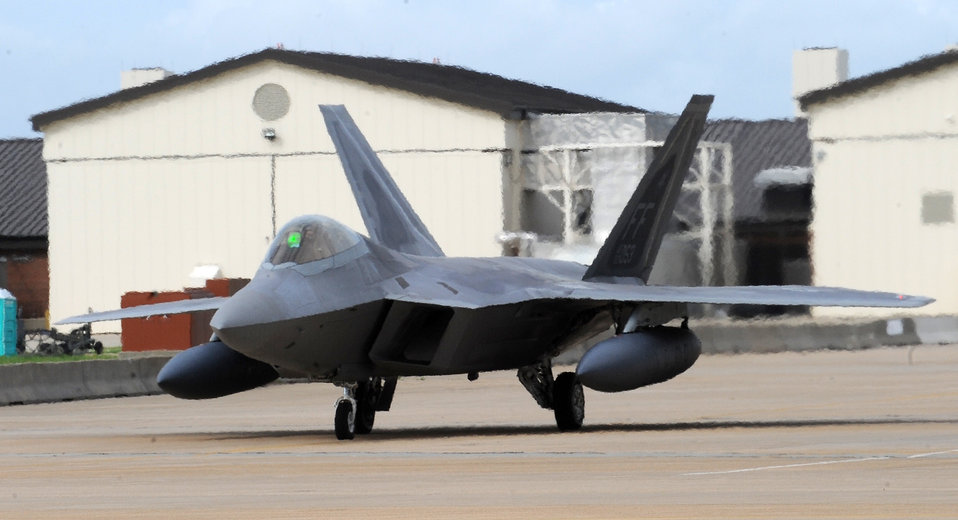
Airmen, F-22s support Pacific presence mission

An F-22 Raptor from the 94th Fighter Squadron taxies in preparation for departure May 26 from Langley Air Force Base, Va., to Kadena Air Base, Japan. More than 280 Langley AFB Airmen and 12 F-22s depart this week for an air and space expeditionary force deployment, which demonstrates the continued U.S. commitment to fulfill its security responsibilities throughout the Western Pacific.